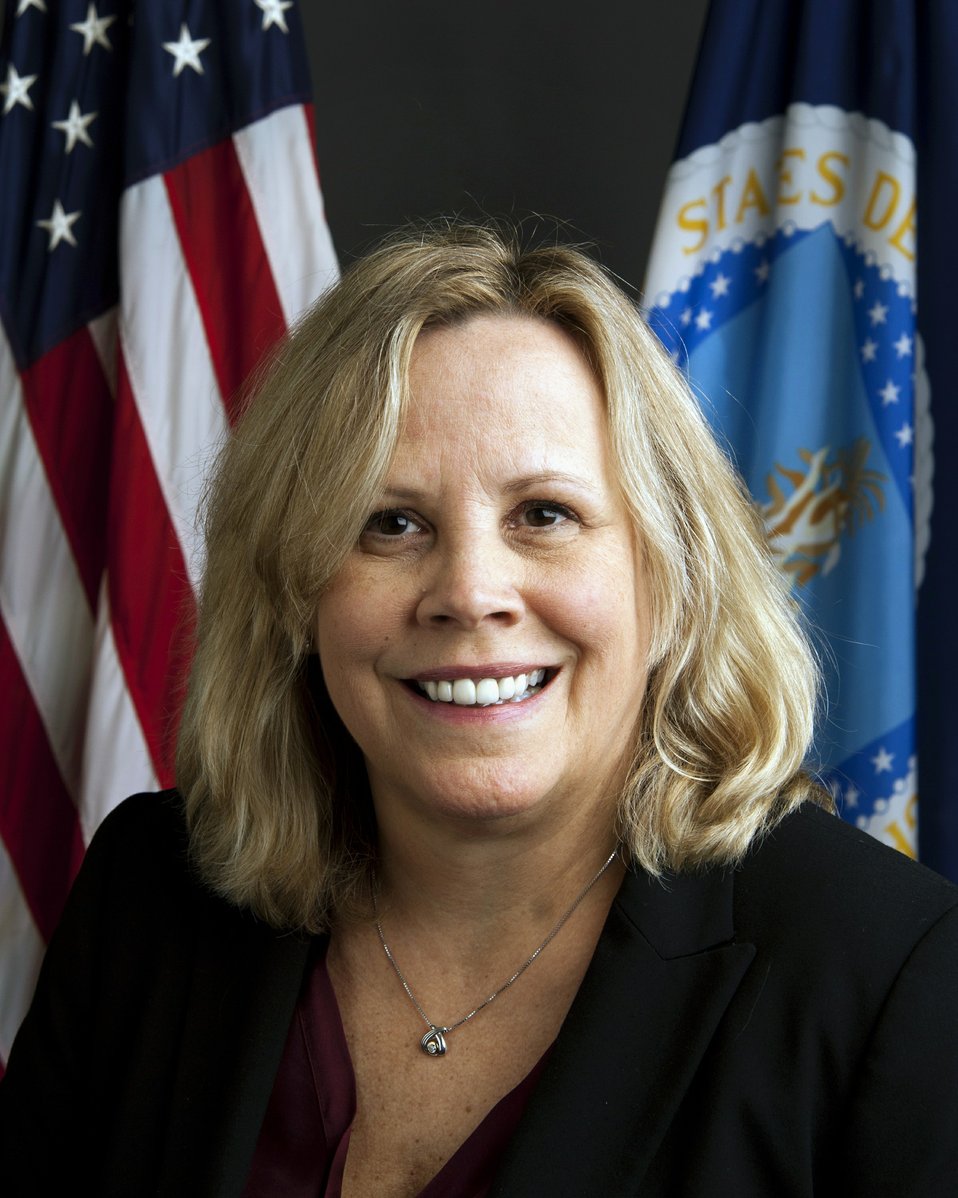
U.S. Department of Agriculture (USDA) Farm Service Agency (FSA) Associate Administrator for Operations and Management Candy Thompson.